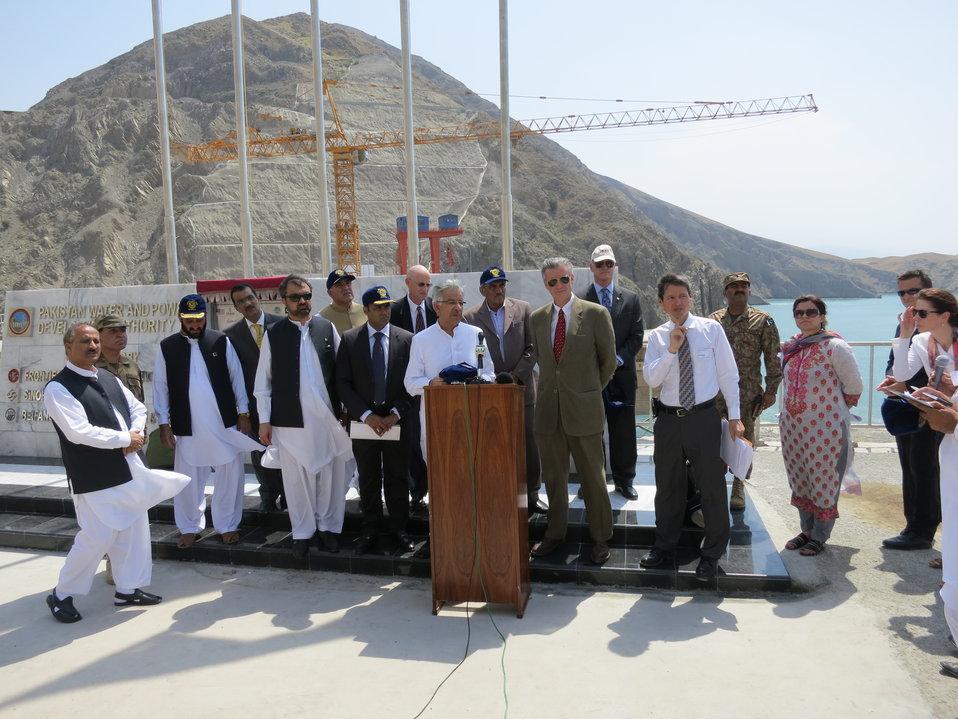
Gomal Zam Sep 2013-2